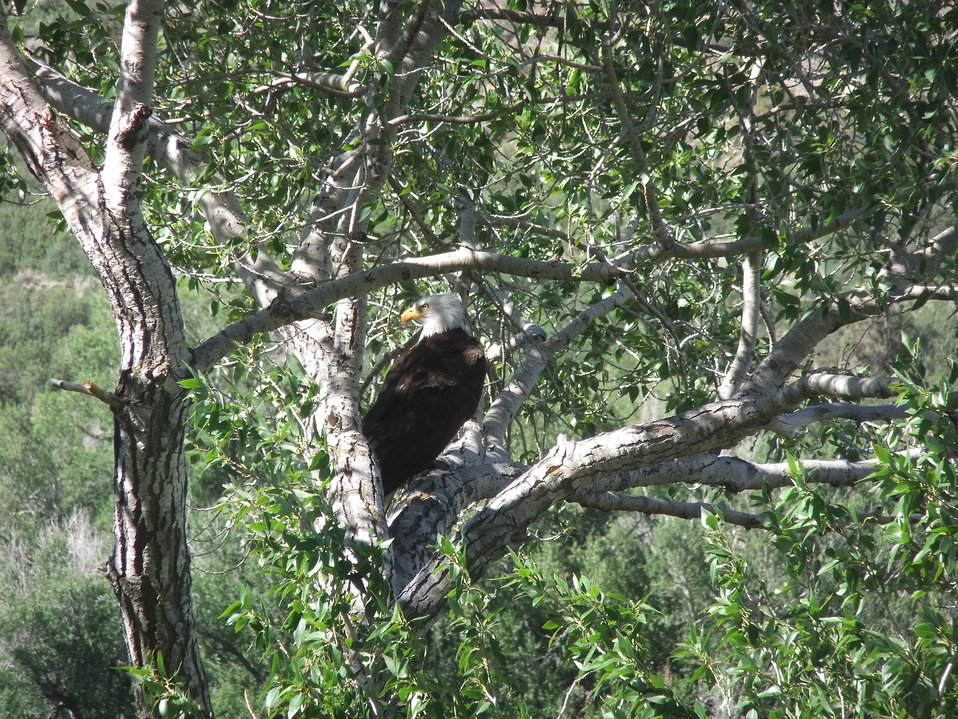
A bird's eye view

A bald eagle sits in a tree, trying to keep an eye on me, but also keeping an eye on the river below.

Location: Just outside Meeker, CO near a USFWS-funded fishing access site

Credit: Amanda Horvath / USFWS

Photo Contest Entry #127